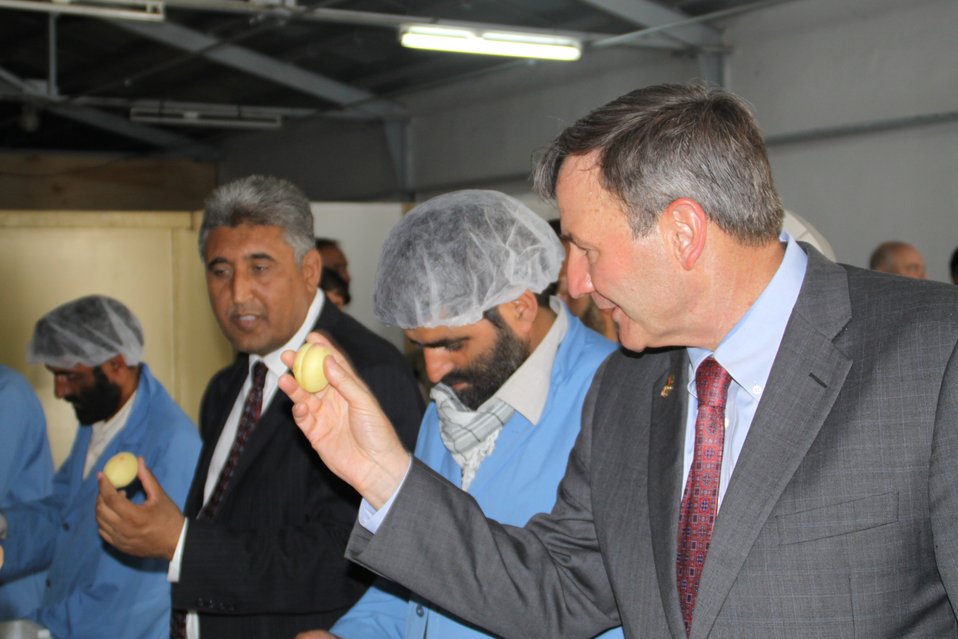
Badam Bagh Farm